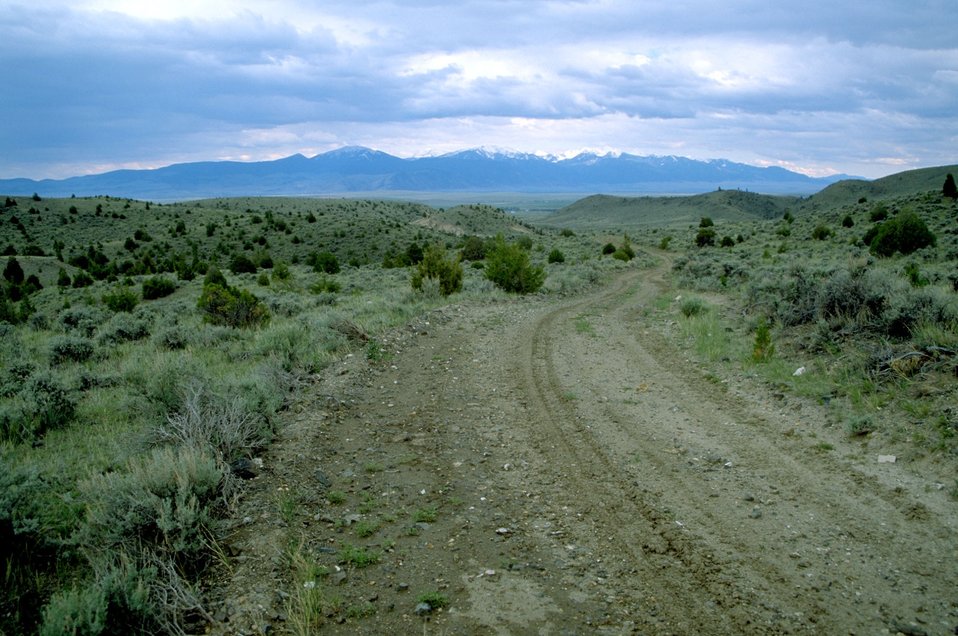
Road that appears to lead to the mountains in the background